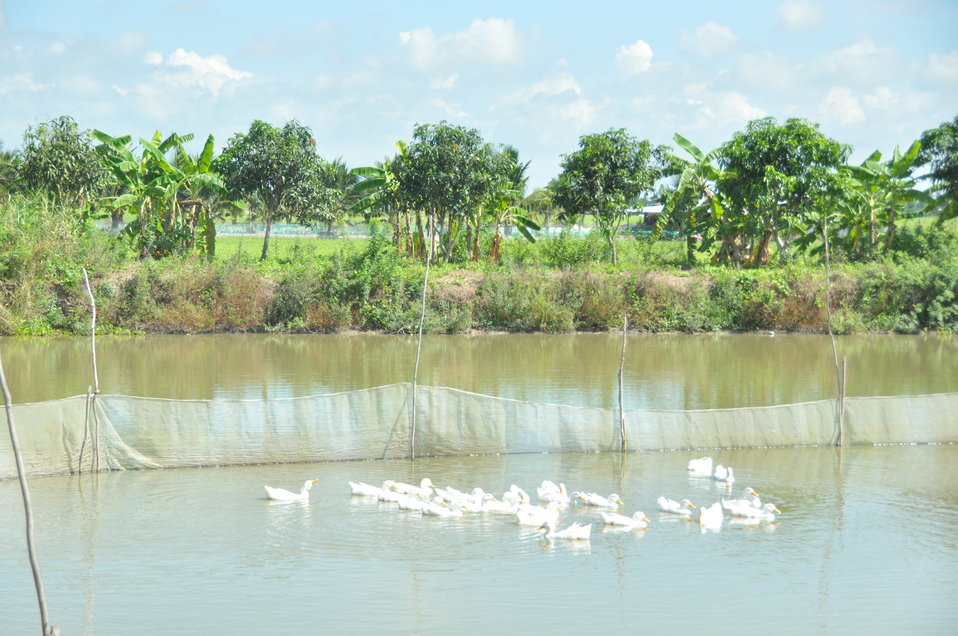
Duck farm in Can Tho

USAID Vietnam